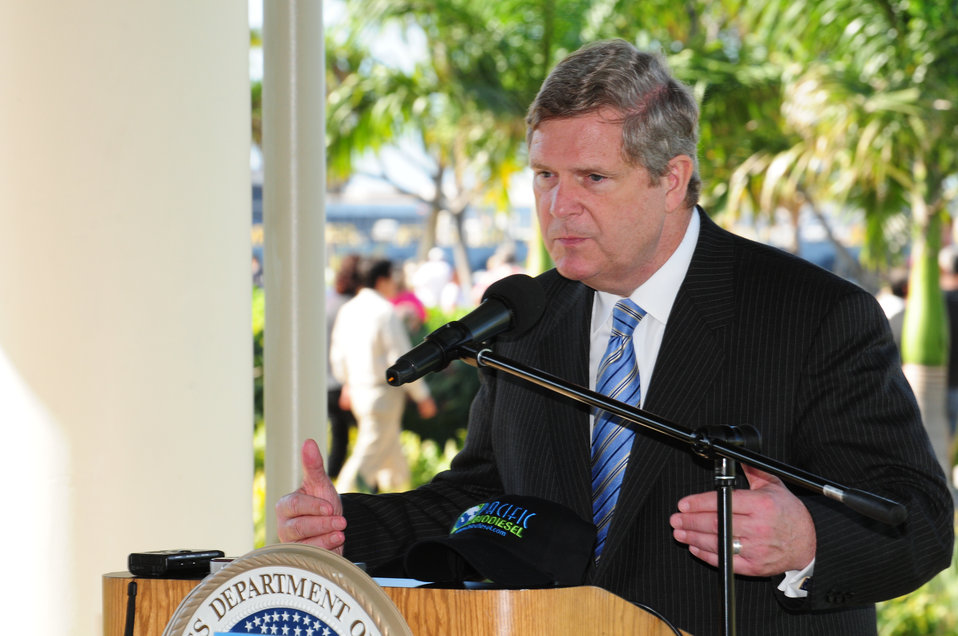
Agriculture Secretary Tom Vilsack highlights the Obama Administration's commitment to renewable energy at the.World War II Valor in the Pacific National Monument's Pearl Harbor Visitor Center. Pearl Harbor naval base was the first Hawaii military marine fleet to use biodiesel, replacing the Department of Navy-operated tour boats that shuttled visitors to and from the USS Arizona Memorial with five new boats capable of running on 100% biodiesel. Near Honolulu, HI, on Tuesday, January 10, 2012.